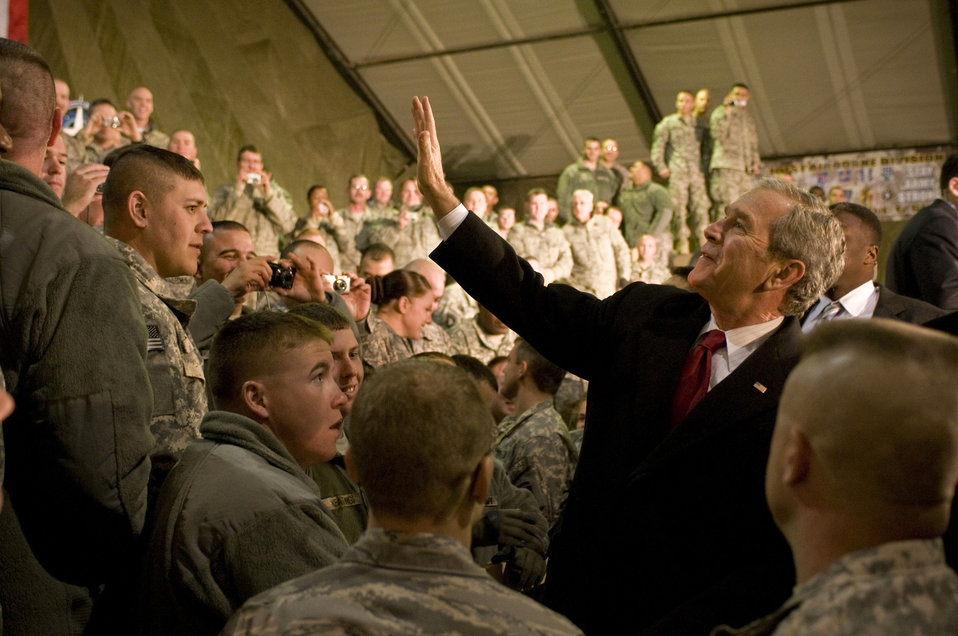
President Bush visits troops in Bagram

President George W. Bush waves to military members Dec. 15 at Bagram Airfield, Afghanistan. After giving his speech, he took time to shake hands and individually thank troops for their service.